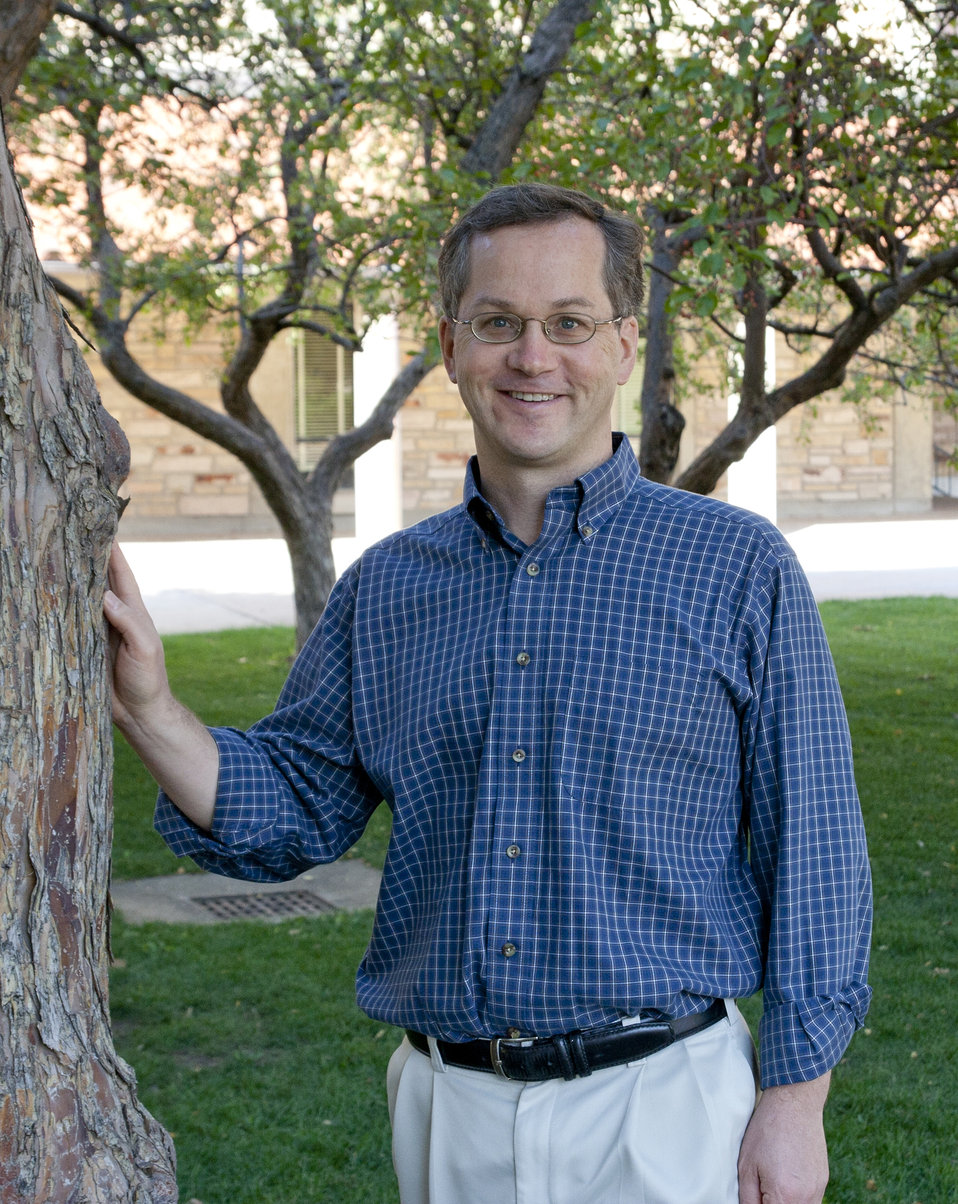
Physicist Thomas Perkins is one of two NIST winners of the 2013 Arthur S. Flemming Awards.